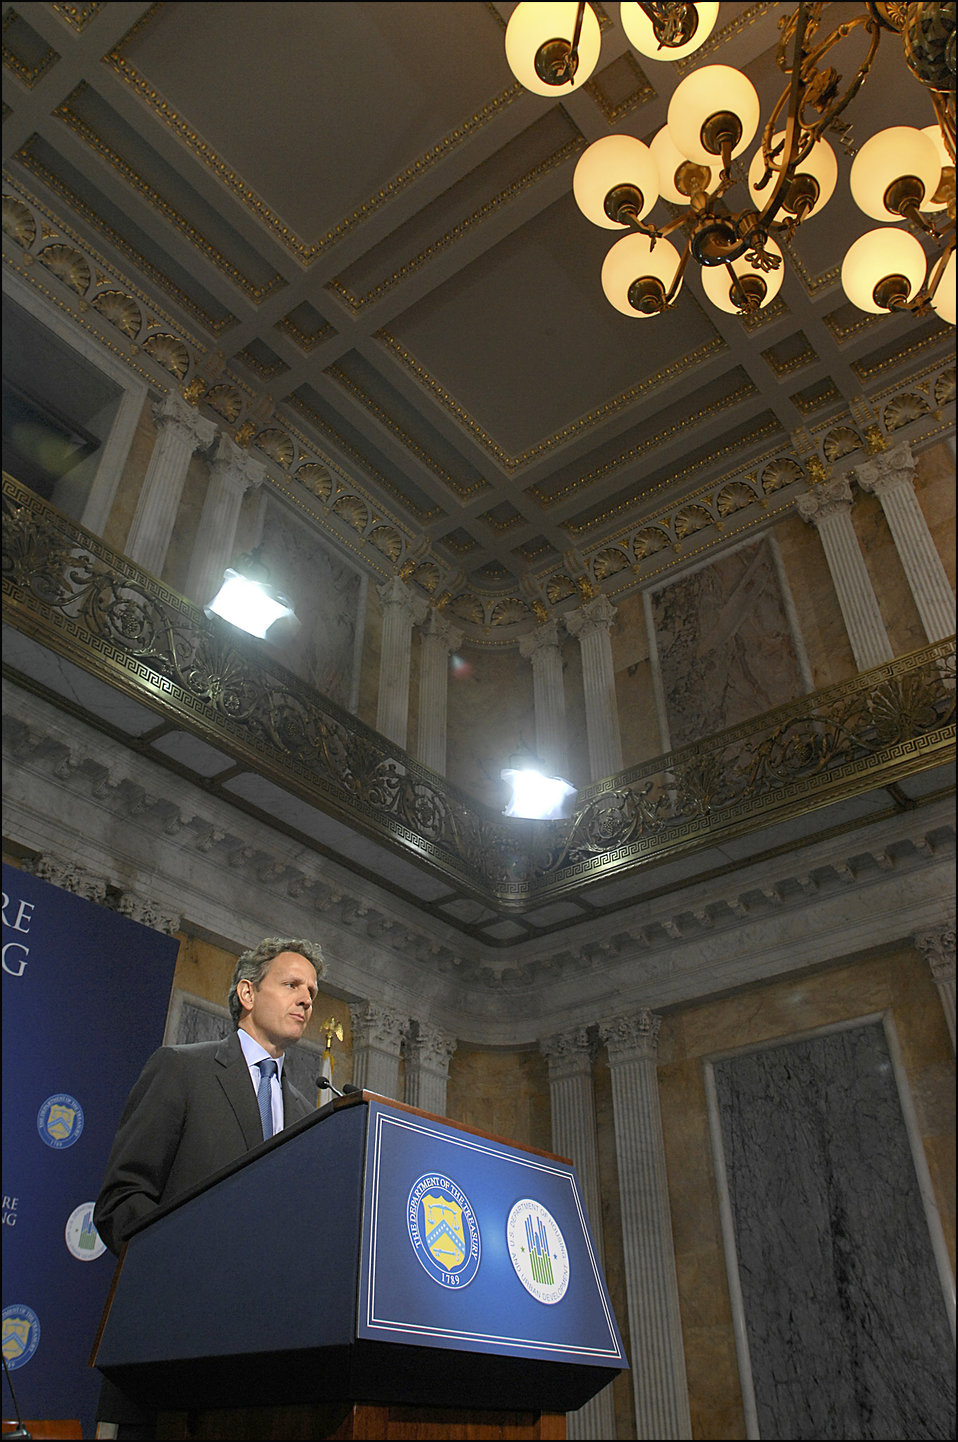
Conference on the Future of Housing Finance, 08/17/2010

“Fixing this system is one of the most consequential and complicated economic policy problems we face as a country,' said Treasury Secretary Tim Geithner at the Conference on the Future of Housing Finance held at the Treasury Department.